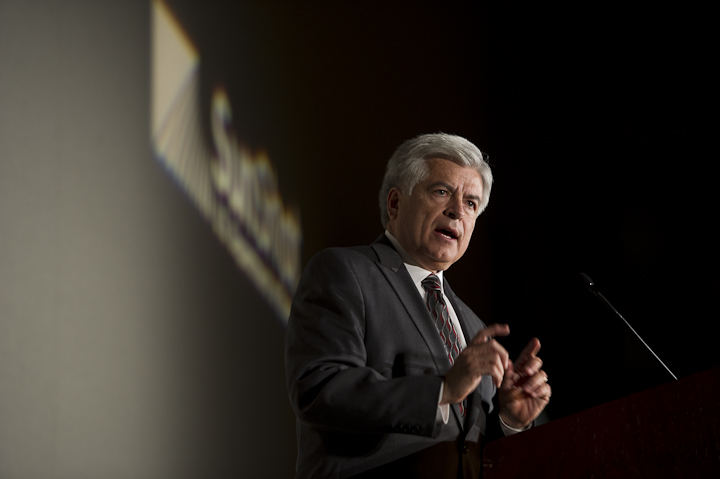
SunShot Dan Arvizu, NREL

June 14, 2012- Dan Arvizu, Director National Renewable Energy Laboratory, speaks at the plenary session at the SunShot Grand Challenge Summit and Technology Forum in Denver, Colorado.